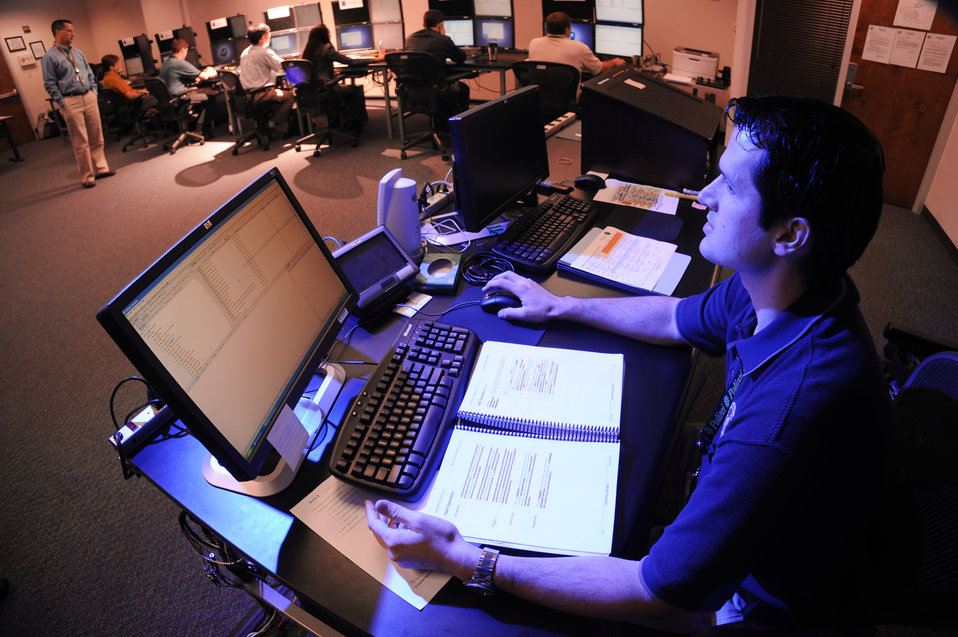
A close look at DoD Cyber Crime Center

Lucus Nelson teaches Hash analysis in Windows forensic examinations using EnCase Sept. 9, 2010, at the Defense Cyber Investigations Training Academy in Linthicum, Md. Additional instructors roam the room providing assistance to any student wanting help. The u-shaped arrangement of workstations allows instructors to easily check the progress of all students in the class.